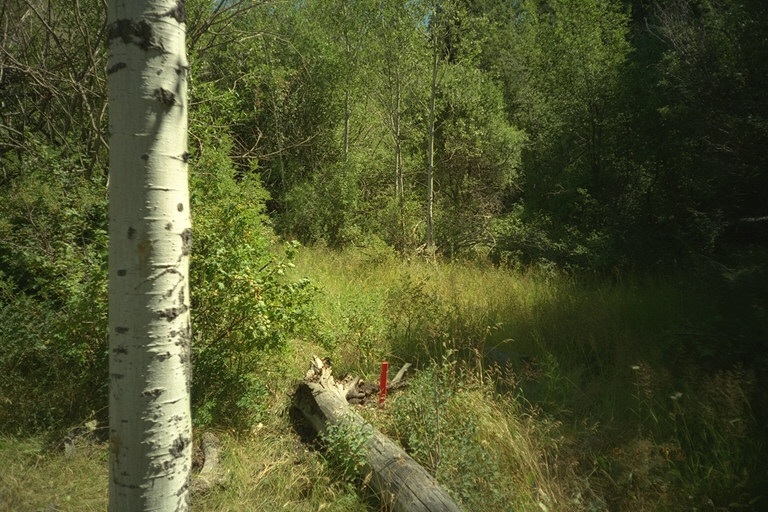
Riparian area Public Lands Salmon Field Office UCSC Upper Columbia Salmon Clearwater District